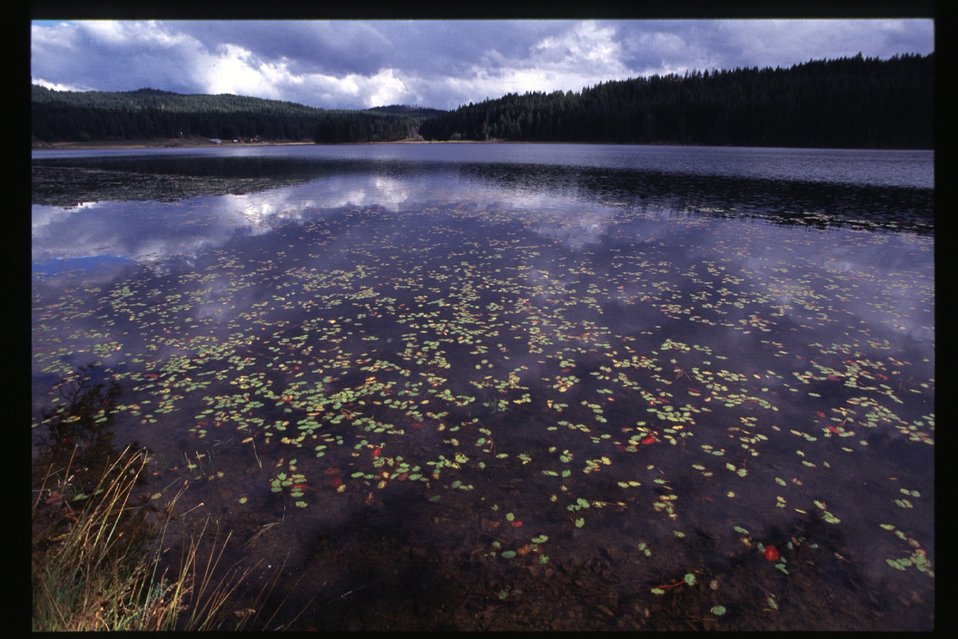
Scenic Gamlin Lake Couer d'Alene Field Office UCSC Upper Columbia Salmon Clearwater District